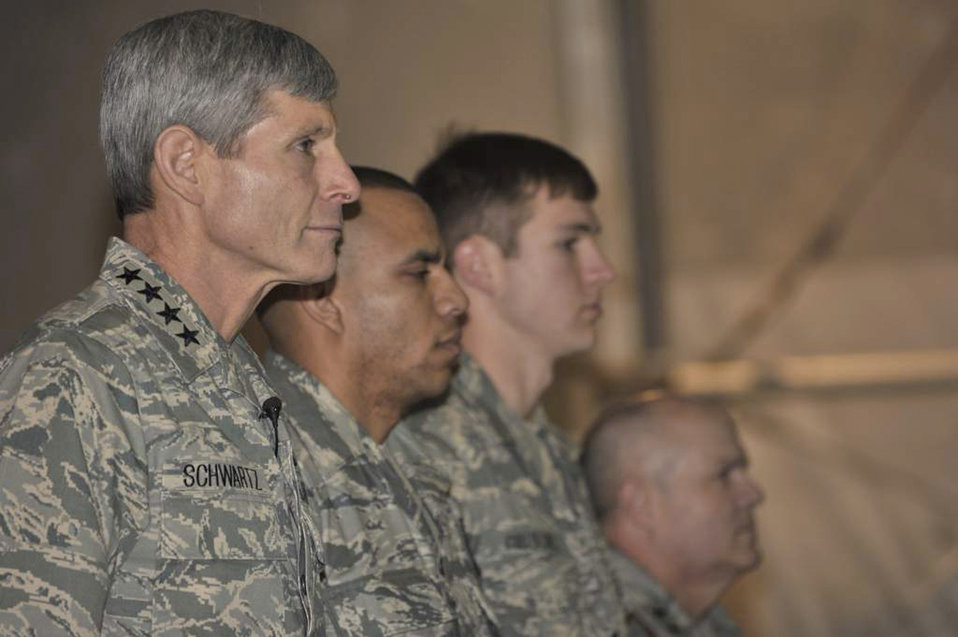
Purple Heart presentation

(From left) Gen. Norton Schwartz, Air Force chief of staff; Capt. Gil Wyche, a security forces officer assigned to the 966th Air Expeditionary Squadron; Senior Airman Brandon Cullen Towle, a joint terminal attack controller assigned to the 817th Expeditionary Air Support Operations Squadron; and Maj. Gen. Charles W. Lyon, 9th Air and Space Expeditionary Task Force-Afghanistan commander, stand at attention during a Purple Heart presentation ceremony at Bagram Airfield, Afghanistan, on Jan. 19, 2011. General Schwartz presented Captain Wyche and Airman Cullen Towle with Purple Hearts during the ceremony.